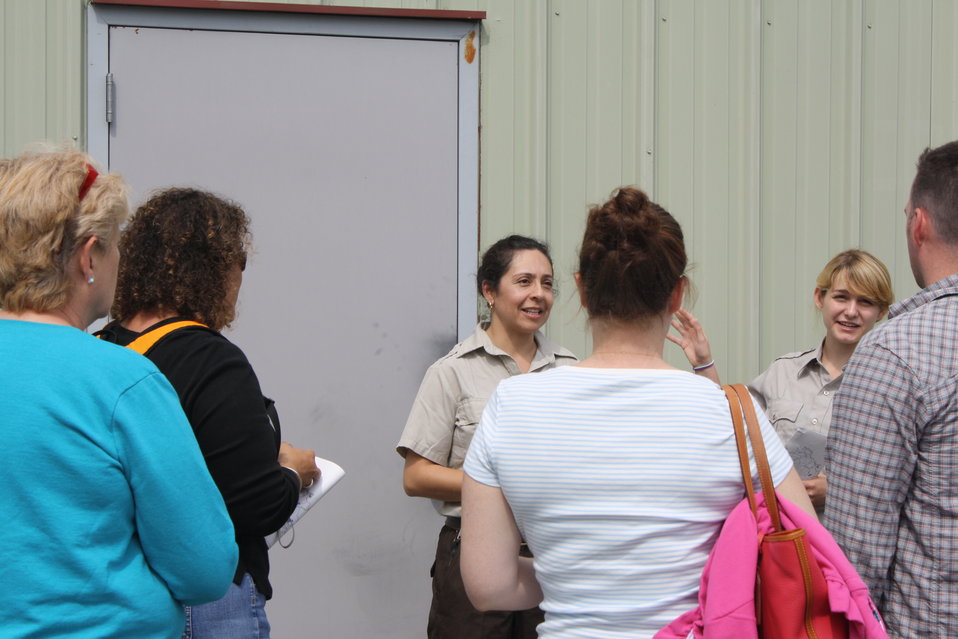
Nashua National Fish Hatchery welcomes regional office employees